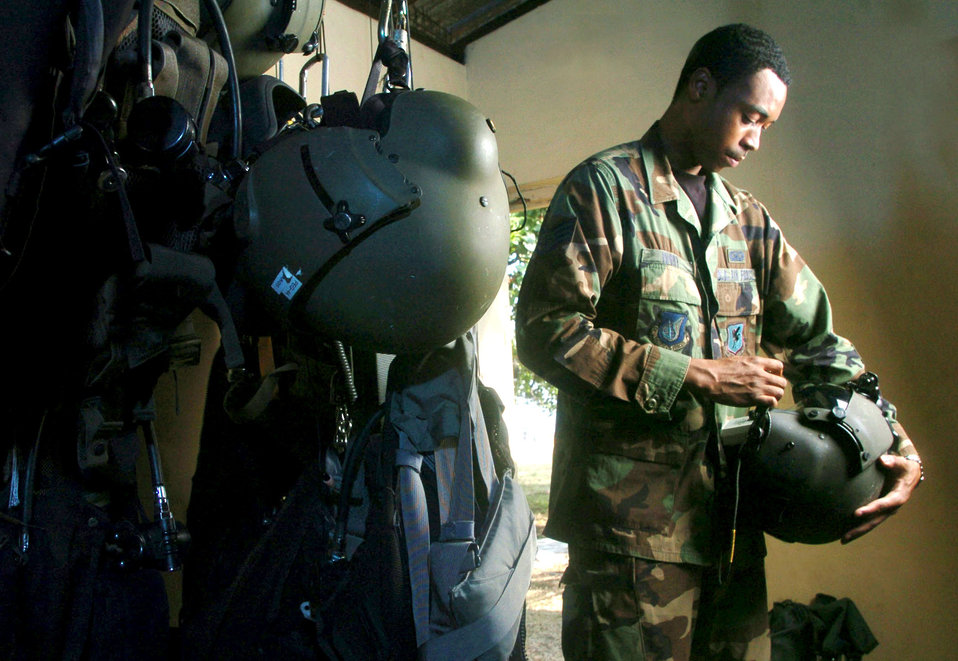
Different views of same humanitarian effort

COLOMBO, Sri Lanka -- Staff Sgt. Rob Ivory inspects flight gear of HH-60G Pave Hawk helicopter crews supporting Operation Unified Assistance. Sergeant Ivory, a life support technician, and others from the 33rd Rescue Squadron at Kadena Air Base, Japan, are helping move relief supplies to tsunami victims.